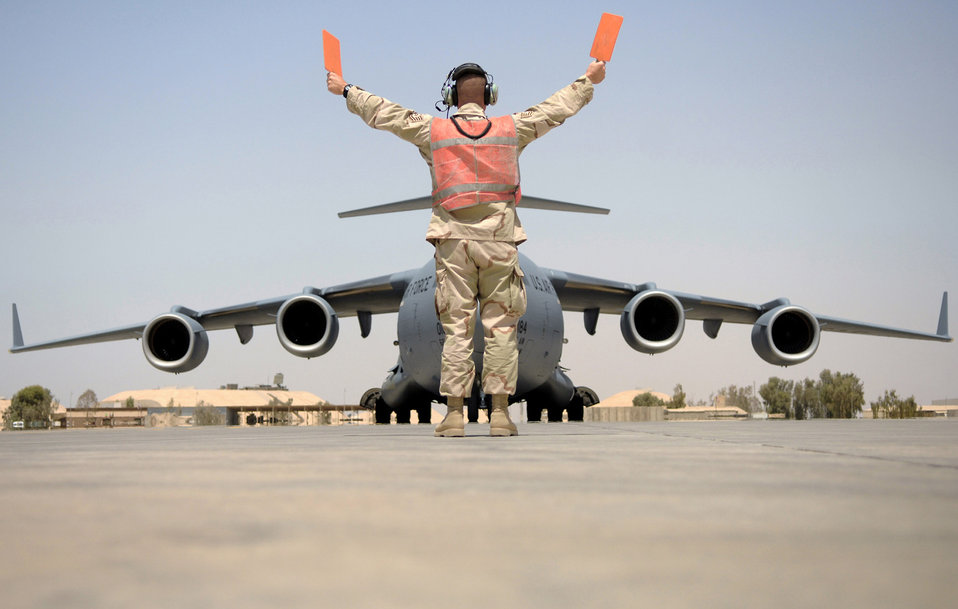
Follow me

Tech. Sgt. Frank Wisnieski prepares to stop a C-17 Globemaster III May 12 at Balad Air Base, Iraq. Coordinating the safe arrivals and departures of dozens of aircraft daily is a 24-hour operation that is executed seamlessly by Airmen working in the transient alert shop. Sergeant Wisnieski is a 332nd Expeditionary Maintenance Squadron transient alert supervisor deployed from Ramstein Air Base, Germany.